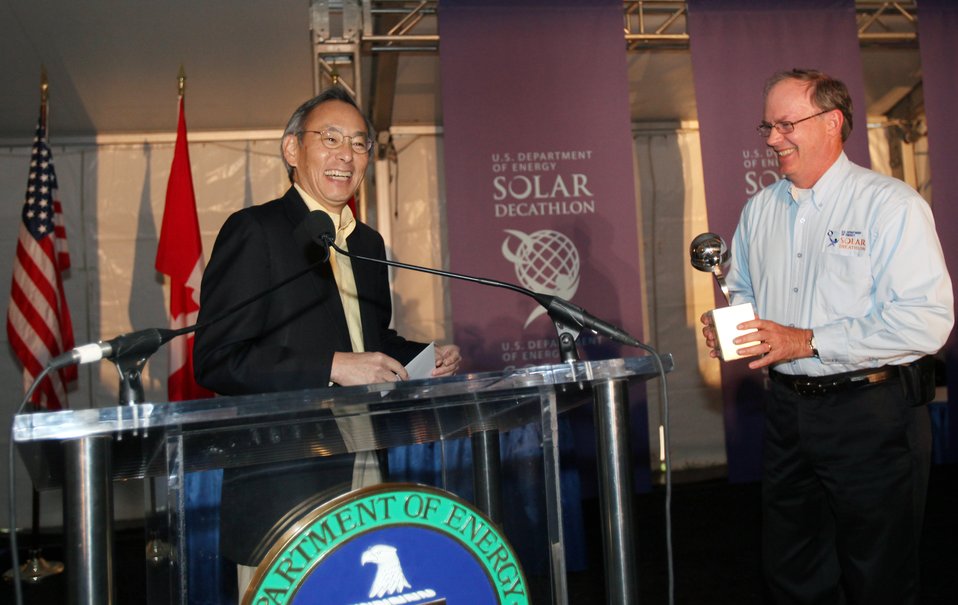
Energy Secretary Steven Chu prepares to announce that overall contest winners of the U.S. DOE Solar Decathlon 2011, alongside Richard King, Director of Solar Decathlon Washington, DC. (Credit: S.Paltera/ U.S. DOE / Solar Decathlon)
The Solar Decathlon is a competition that challenges college and university teams from around the world to design, build, and operate solar-powered houses that are affordable, highly energy efficient, attractive, and easy to live in. The 2011 teams and their houses represented a broad range of design solutions, geographic locations and climate, and were targeted toward urban, suburban and rural settings. The houses were intended for different housing markets, including lower-income, disaster relief, retirement, and single family.